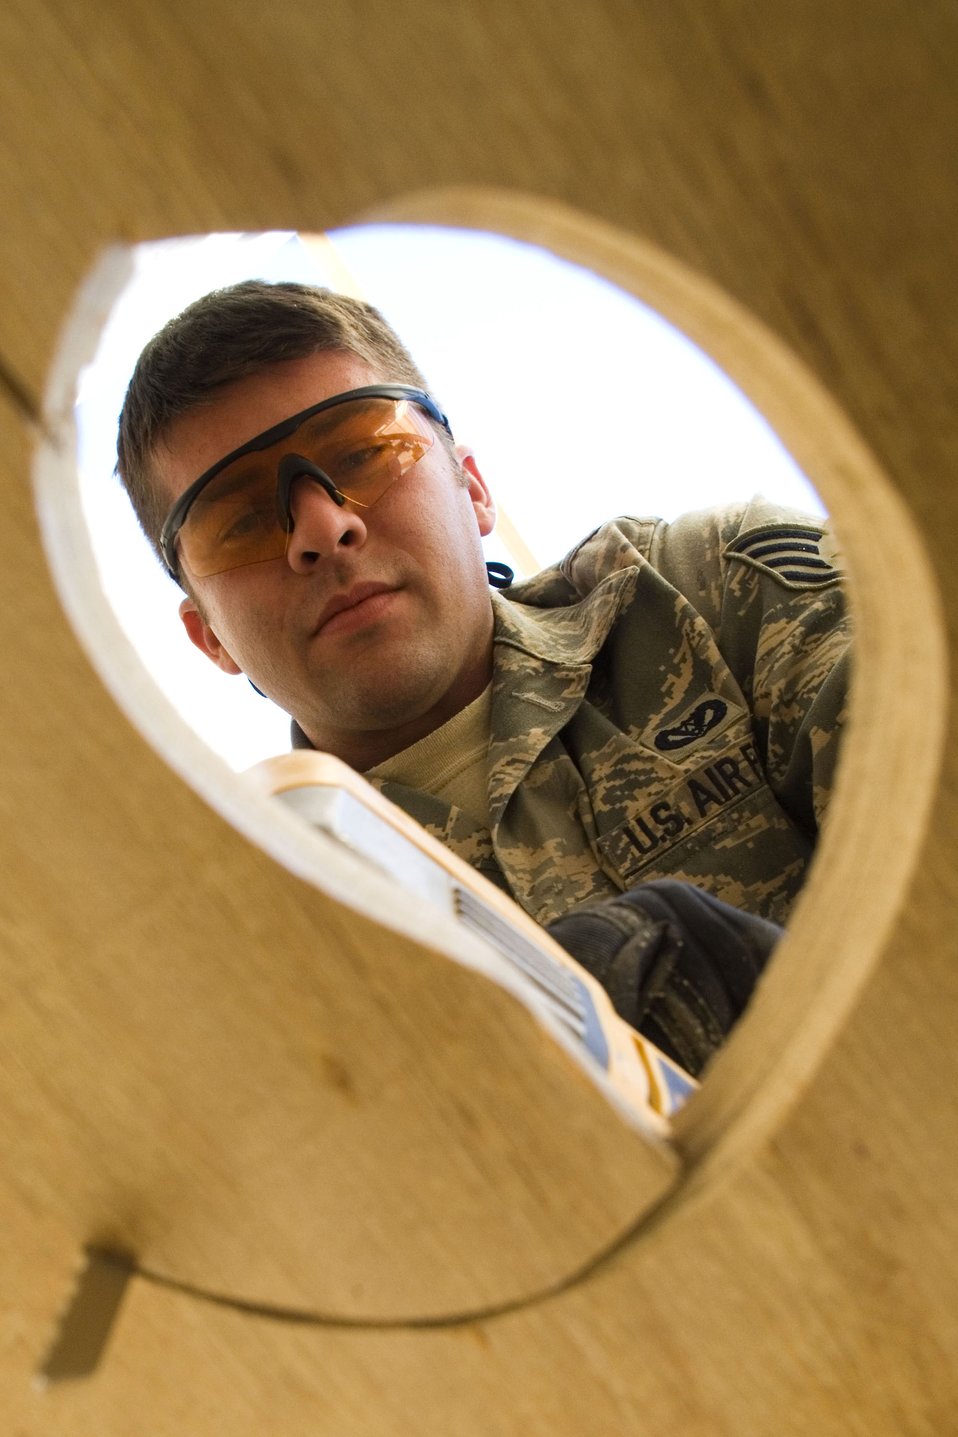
Fixing the 'hole' thing

Staff Sgt. Caleb Dennis saws a drainage hole for a shower latrine unit Jan. 15 at Balad Air Base, Iraq. The unit is a prototype to be used at forward operating bases throughout Iraq. Sergeant Dennis, a 732nd Expeditionary Civil Engineer Squadron utility technician, is deployed from Kadena Air Base, Japan.